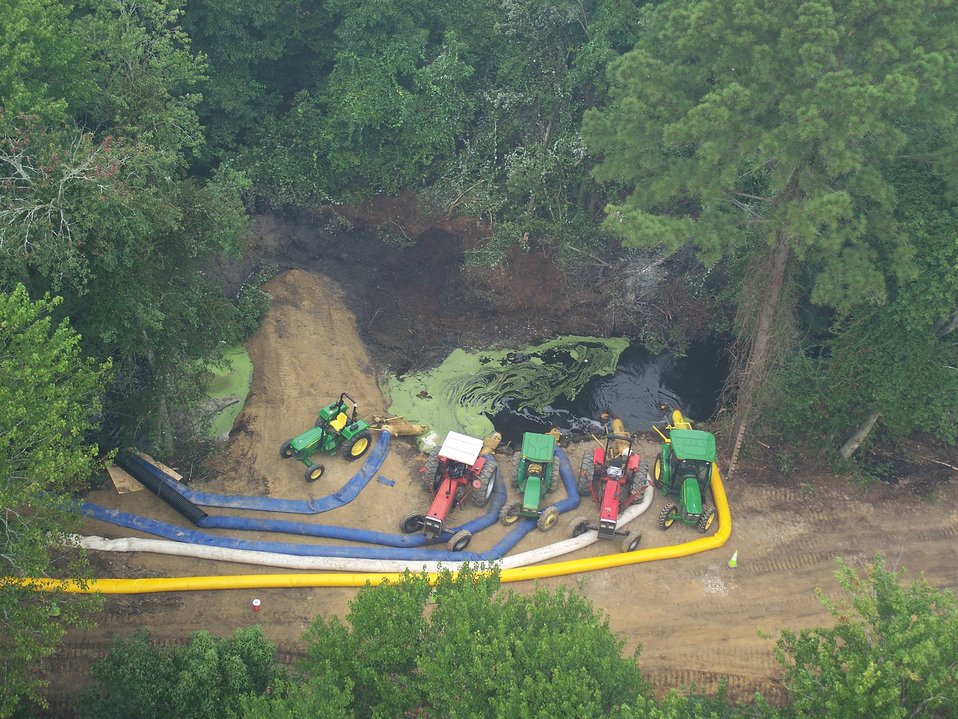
Colorful pumps

Suffolk, VA, August 2011: Pumps positioned on the east side of Lake Drummond add a splash of color to the landscape at the Lateral West Fire burning on Great Dismal Swamp National Wildlife Refuge.